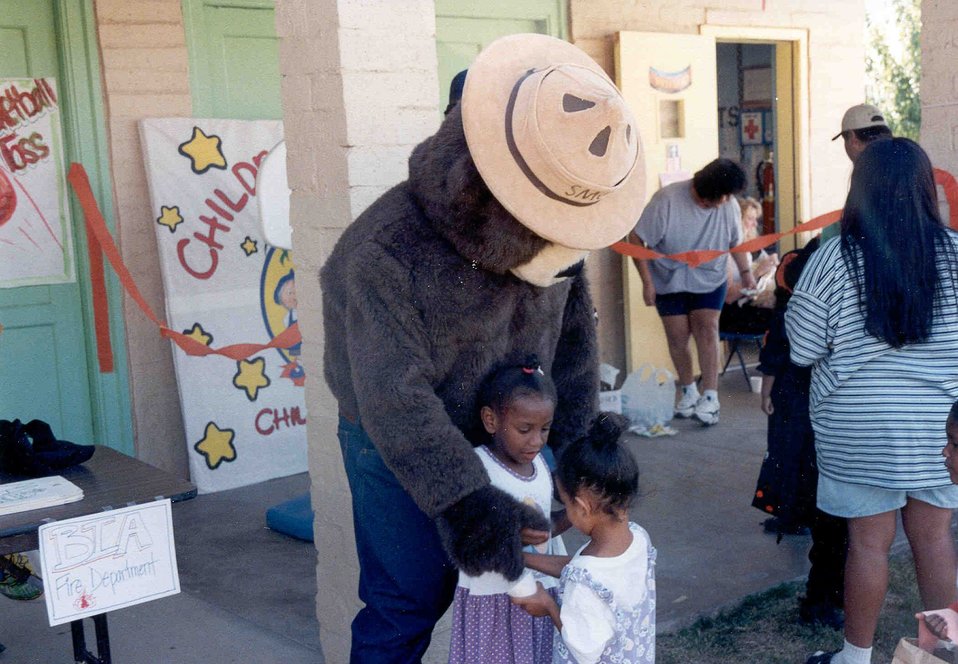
Smokey Bear helping kids learn about fire prevention at a Head Start Fair.